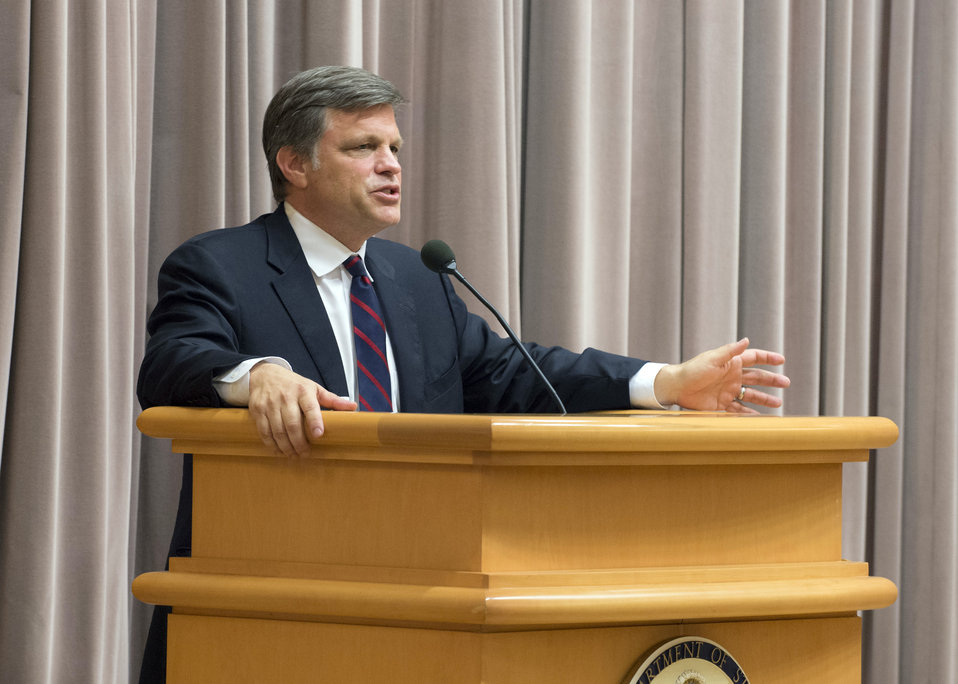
Historian Doug Brinkley Addresses the Open Forum

Historian Douglas Brinkley addresses the Open Forum at the U.S. Department of State in Washington, D.C., on May 28, 2014.